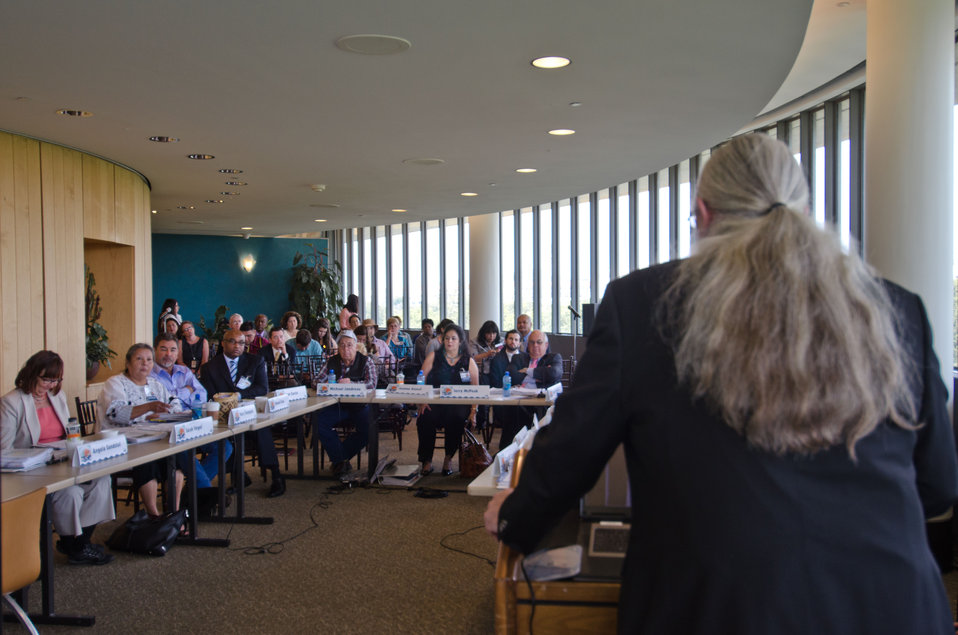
U.S. Department of Agriculture (USDA) Deputy Under Secretary Natural Resources and Environment (NRE) Arthur “Butch” Blazer speaks during the final day of the first business meeting of USDA’s Council for Native American Farming and Ranching (CNAFR) held at the National Museum of the American Indian in Washington, D.C. on Tuesday, Aug. 14, 2012. CNAFR was created to advise the Secretary on ways to eliminate barriers to participation for Native American Farmers and Ranchers in USDA programs. The Council was established as part of the Keepseagle settlement, and is conducted under the oversight of USDA's Office of Tribal Relations under the Office of the Secretary of Agriculture.